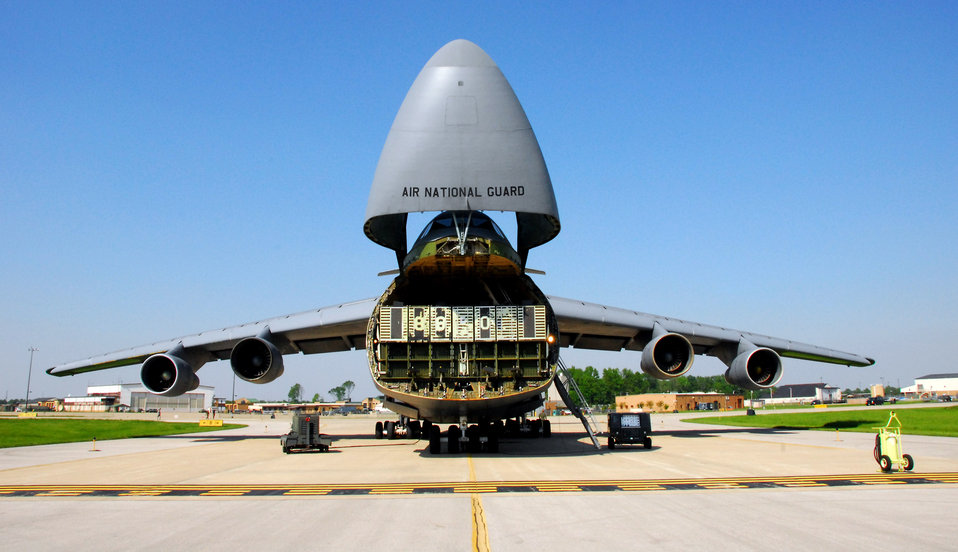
C-5 equals max capacity

The nose is lifted and the ramp is lowered May 12 on a C-5 Galaxy from Stewart Air National Guard Base, New York, at Hulman Field in Terre Haute, Ind. The C-5 is here in support of Exercise Ardent Sentry. Ardent Sentry is designed to hone coordination between the Department of Defense as well as federal, state, local and private agencies in a series of challenging scenarios ranging from natural disasters to terrorist incidents.